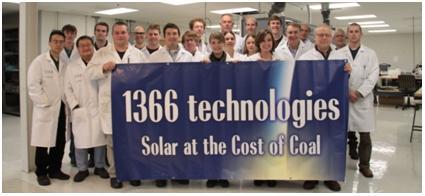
1366

With ARPA-E’s financial support, 1366 Technologies is developing a novel wafer manufacturing process that plucks wafers directly from molten silicon and could cut the cost of installed photovoltaic systems in half and reduce wafer capital costs by 90 percent. If successful, this project could increase domestic energy production and generate many new jobs in the solar photovoltaic industry.